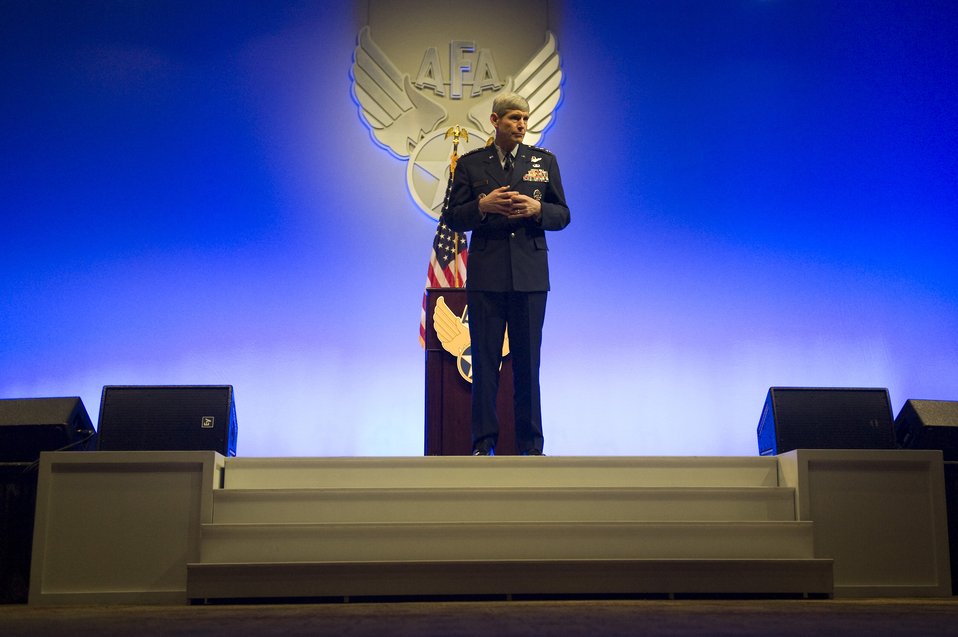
Chief of staff highlights importance of space to Air Force mission

Air Force Chief of Staff Gen. Norton Schwartz listens to a question after giving a speech during the Air Force Association's Air Warfare Symposium and Technology Exposition Feb. 18, 2010, at the Rosen Shingle Creek Hotel in Orlando, Fla. The symposium will run through Feb. 19.